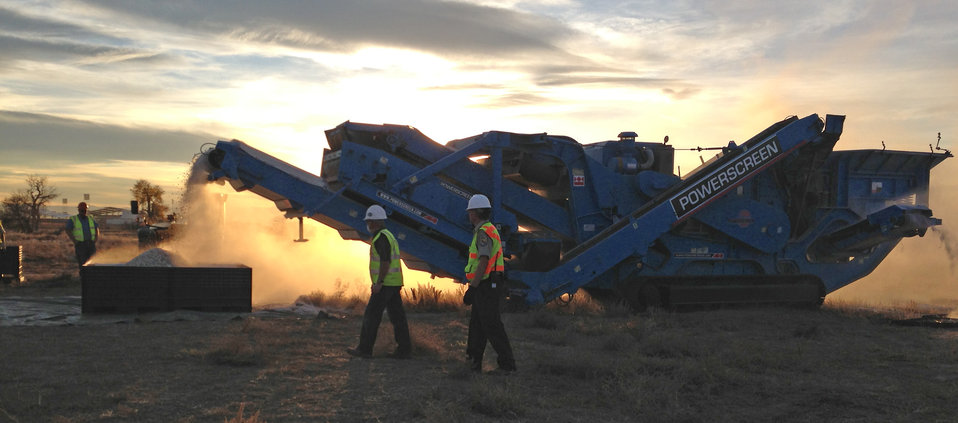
Crushing continued until dusk